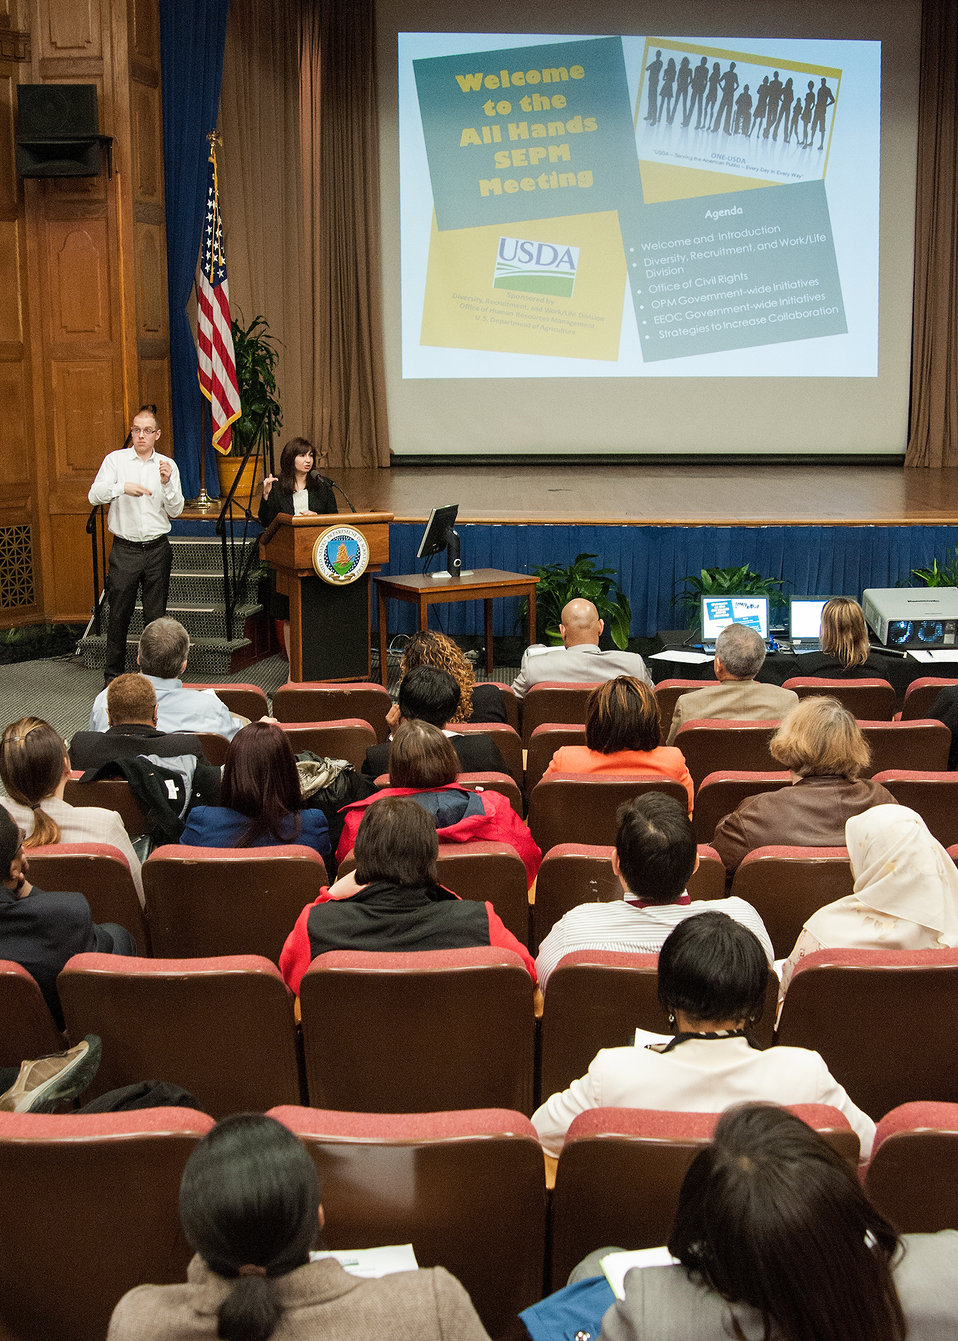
U.S. Office of Personnel Management (OPM) Office of Diversity and Inclusion Director Veronia Villalobos discusses OPM Government Wide Initiatives at the First Annual All Hands Special Emphasis Program Managers (SEPM) Meeting at the U.S. Department of Agriculture Jefferson Auditorium in Washington, D.C. on Wednesday, Mar. 13, 2013.